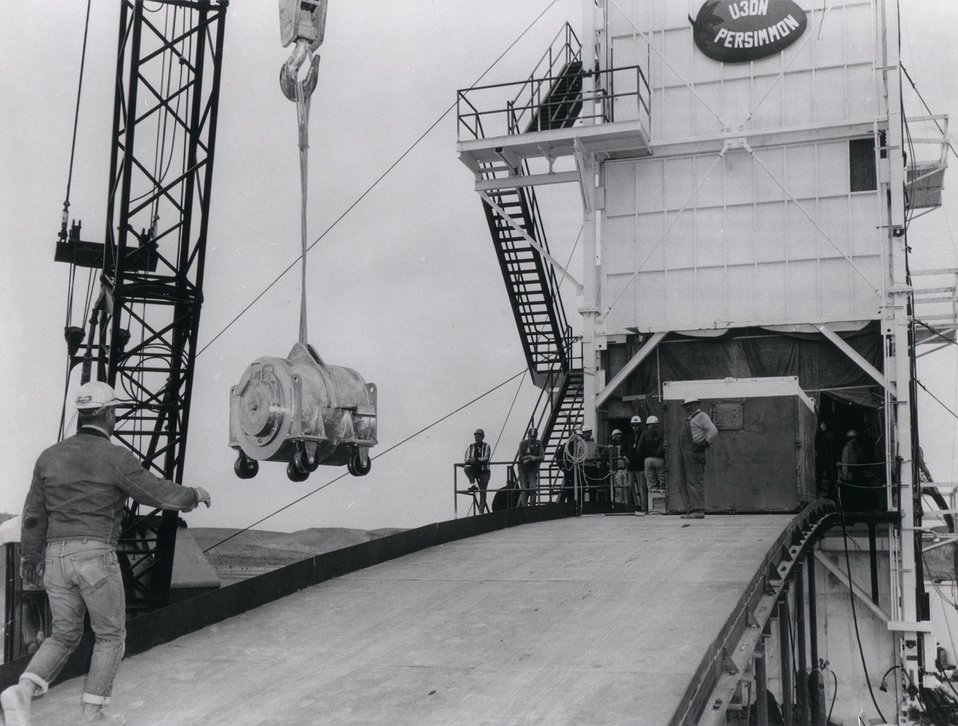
PROMETHIUM-147 CROSS SECTION MEASURED...The 1,000-curie sample of Pm147, enclosed in a massive lead shield, is shown arriving at the experimental area of the Nevada Test Site for the Plowshare Program's Persimmon event in early 1967. Circa 1967.